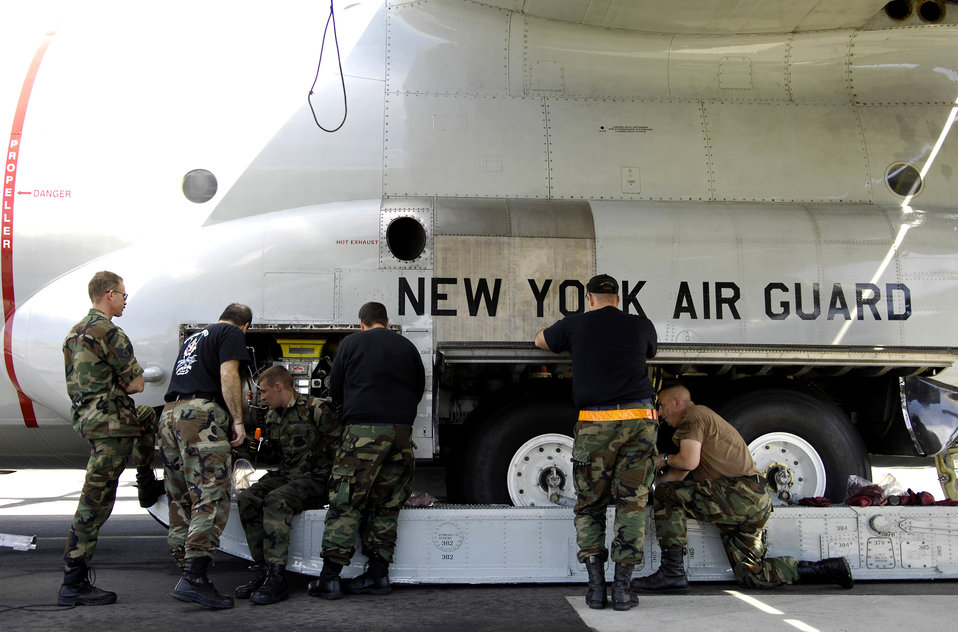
Airmen support Operation Deep Freeze

Airmen from the 109th Aircraft Maintenance Squadron work on a ski-equipped LC-130 Hercules at Christchurch, New Zealand Nov. 21. The LC-130s, crews and support personnel are from the New York Air National Guard's 109th Airlift Wing and are at Christchurch and McMurdo Station, Antarctica, to support the 13th Air Force-led Joint Task Force Support Forces Antarctica's Operation Deep Freeze.